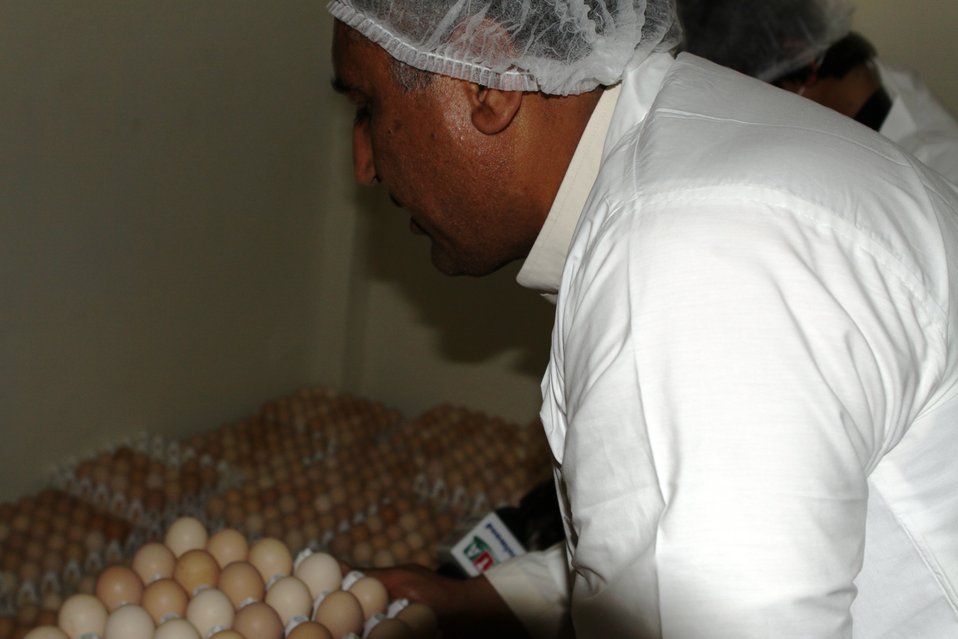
Bolan Poultry Farm